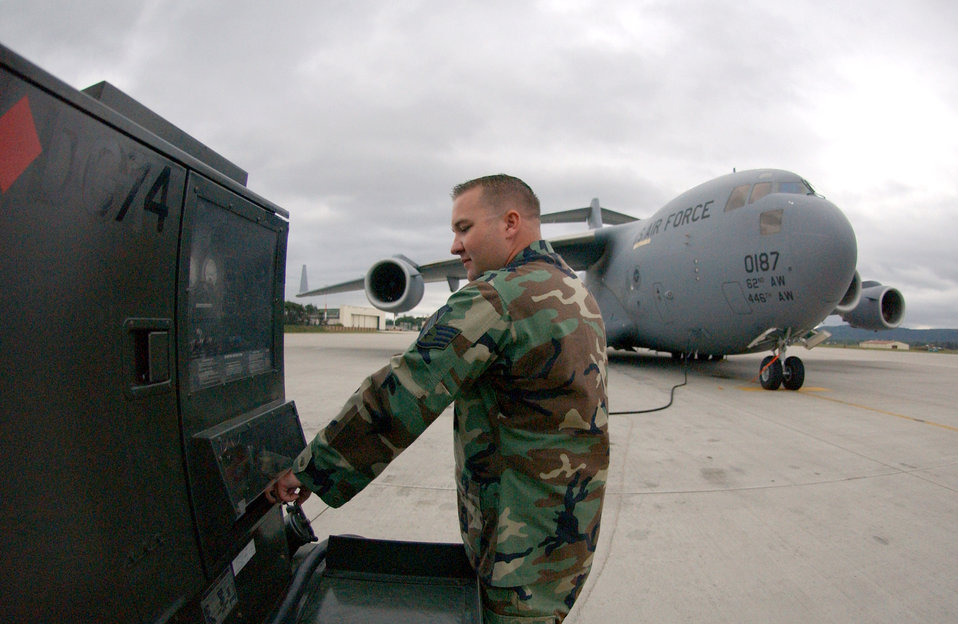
Daily maintenance provides dose of prevention

Staff Sgt. Steve Fields powers down the Hobart electrical power cart in order to perform daily maintenance on a C-17 Globemaster III at Ramstein Air Base, Germany on June 22. Sergeant Fields is a propulsion specialist with the 723rd Air Mobility Squadron.